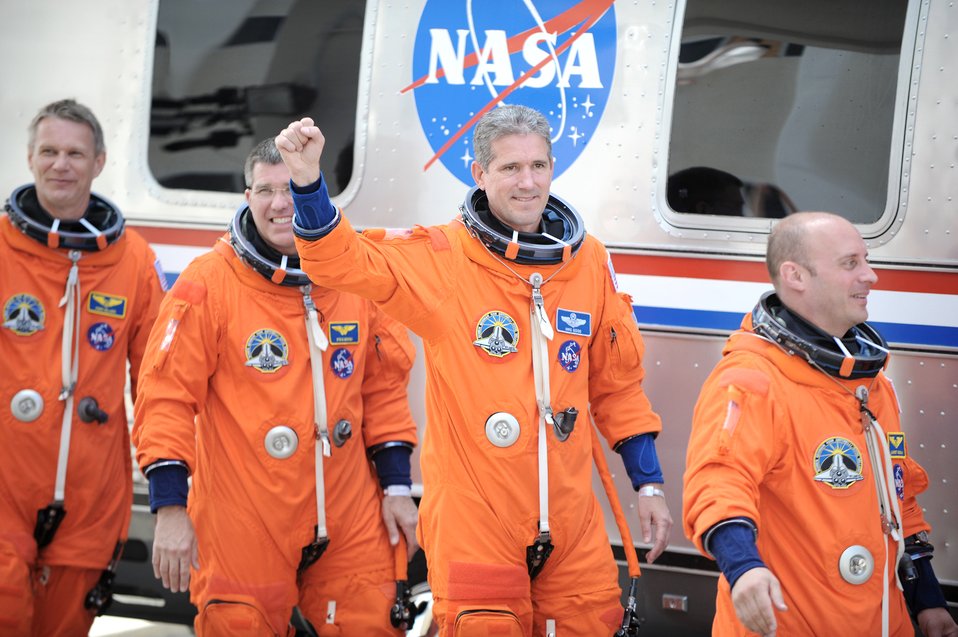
Space shuttle Atlantis

Astronauts prepare to board the space shuttle Atlantis May 14, 2010, at the Kennedy Space Center in Cape Canaveral, Fla.